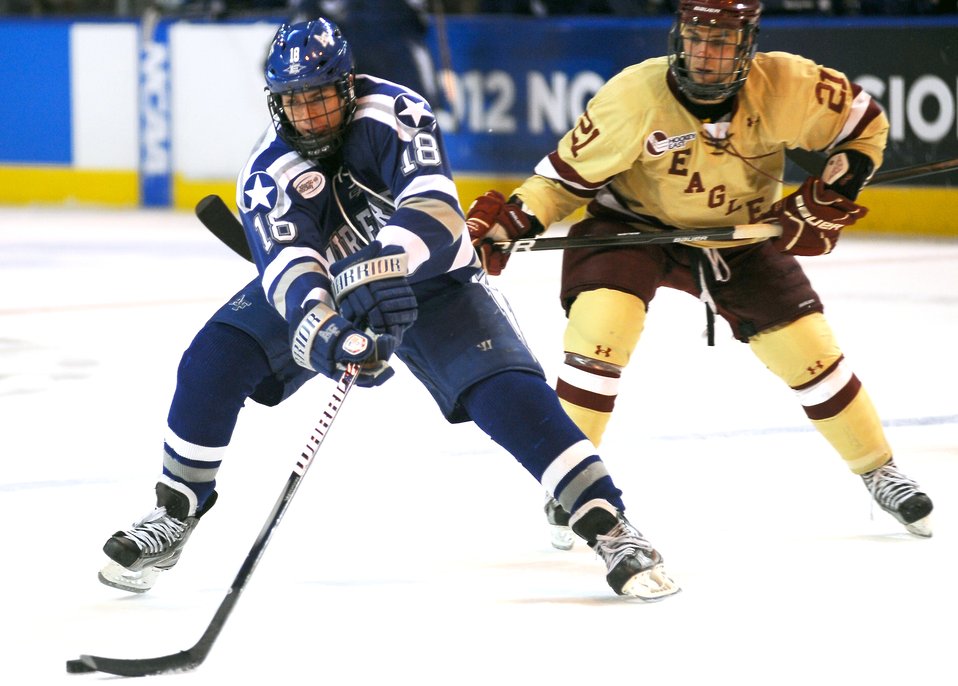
Falcons fall to Eagles in another tournament heartbreaker

George Michalke gets a takeaway for the Air Force Academy Falcons during the NCAA Hockey Championship Tournament in Worcester, Mass., March 24, 2012. The Falcons came up short against the Boston College Eagles 2-0. This was the Falcons' fifth trip to the tournament in the last six years.